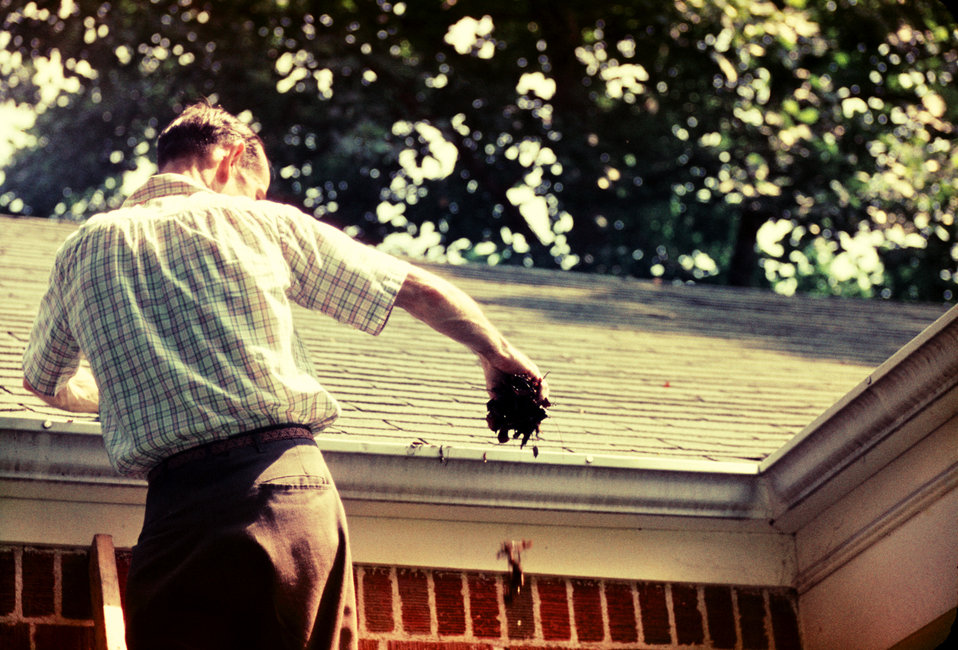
Domestic mosquitoes can breed in gutter drains.